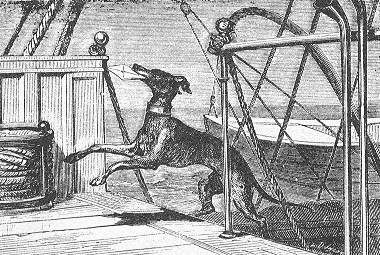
An illustration from Jules Verne's novel 'Journeys and Adventures of Captain Hatteras', part I: 'The English at the Noth Pole' drawn by Édouard Riou and/or Henri de Montaut. Polski: Ilustracja powieści Juliusza Verne'a 'Podróże i przygody kapitana Hatterasa', części I: 'Anglicy na Biegunie Północnym' autorstwa Édouarda Riou i/lub Henri de Montauta. Français : Jules Verne: 'Voyages et aventures du capitaine Hatteras - Les Anglais au Pôle Nord', Édouard Riou et Henri de Montaut.